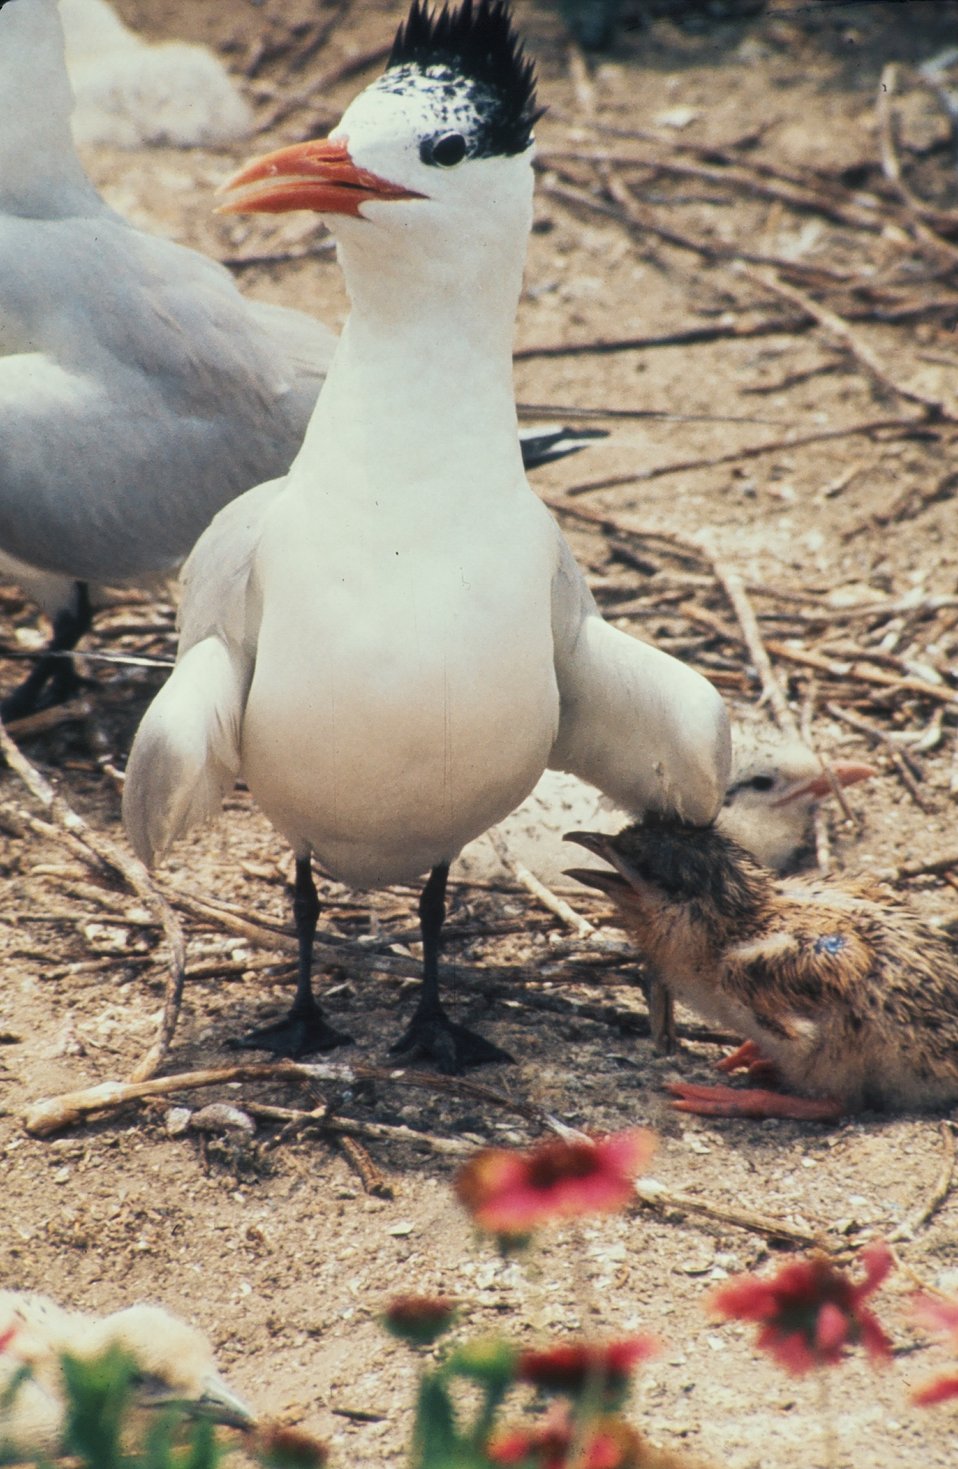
Royal Tern and young

A royal tern is seen with its young.